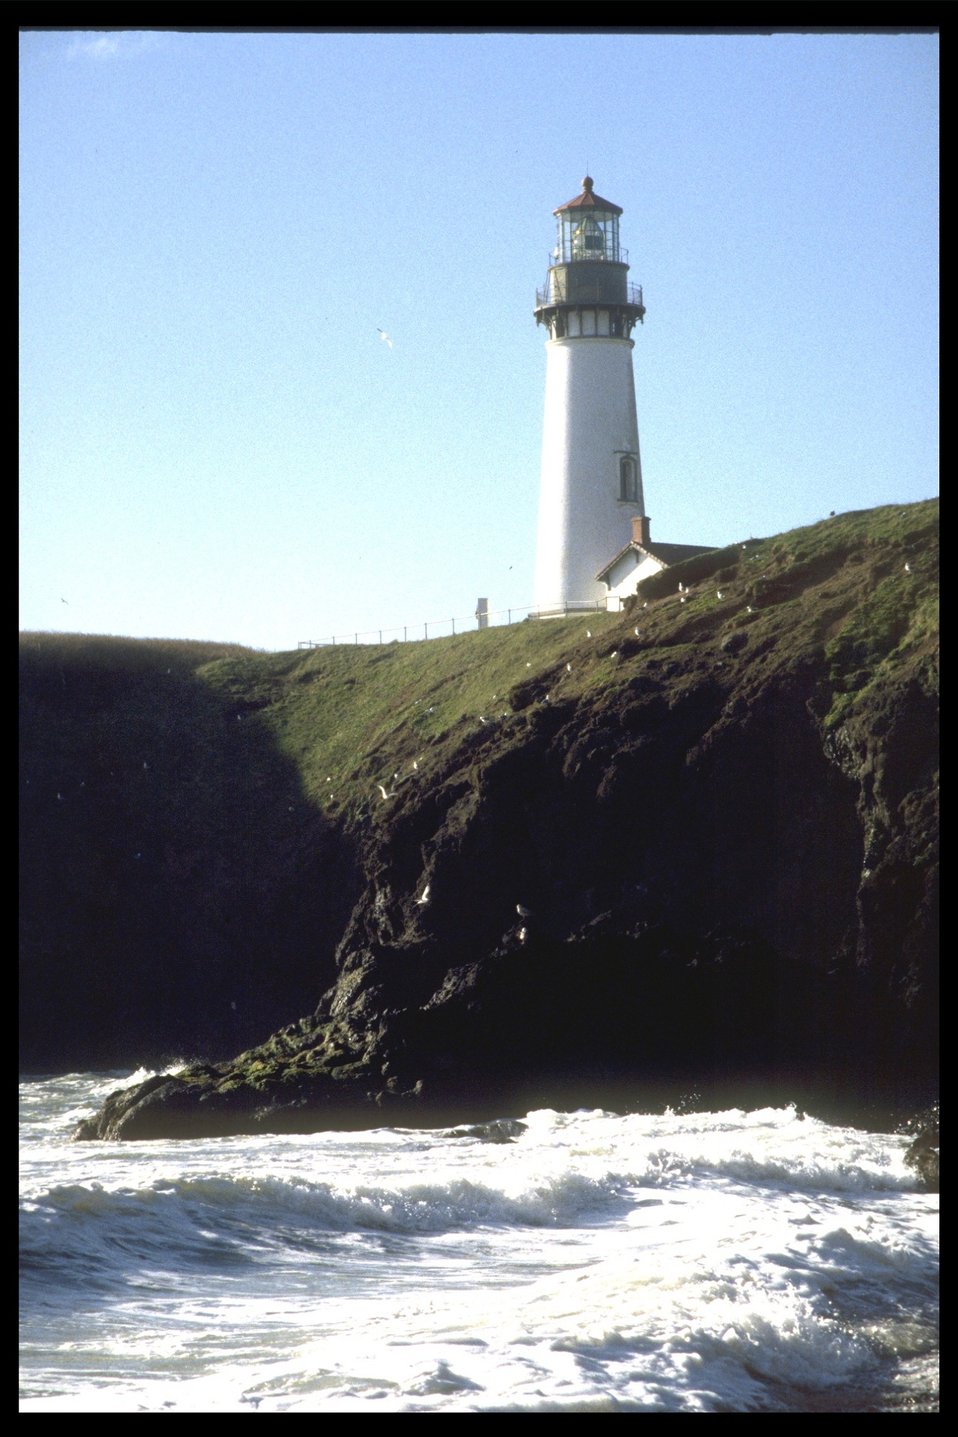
Yaquina Head Lighthouse.